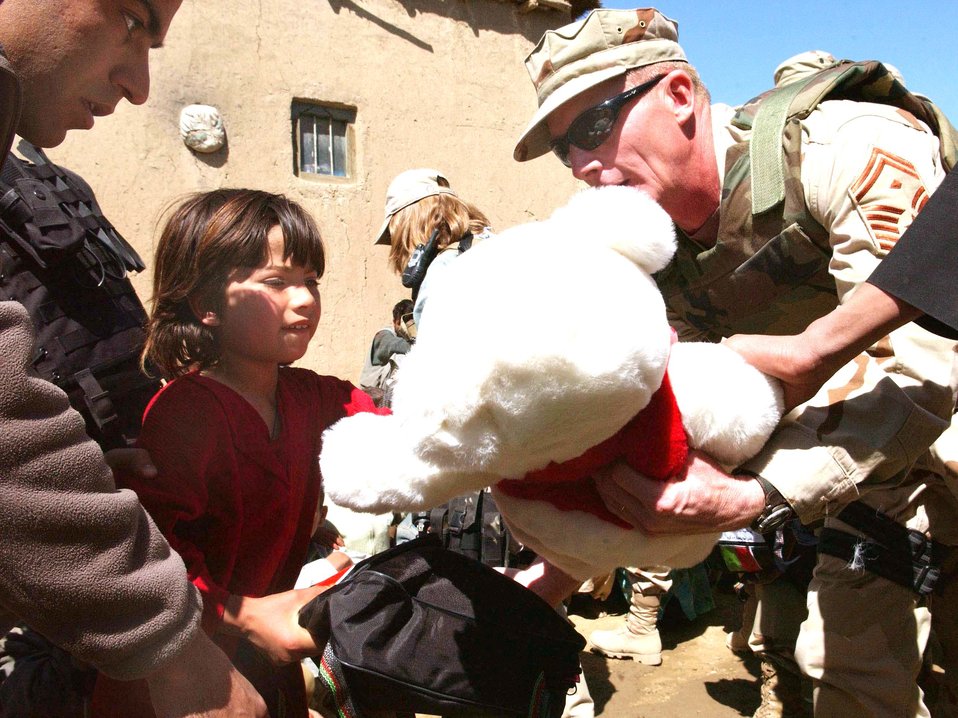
Airmen adopt-a-village or two

JA FARKEL, Afghanistan - Senior Master Sgt. Tim Bolon gives a teddy bear and a bag of school supplies to an Afghan girl during an Adopt-A-Village visit. He is the 455th Expeditionary Mission Support Group first sergeant at nearby Bagram Air Base.